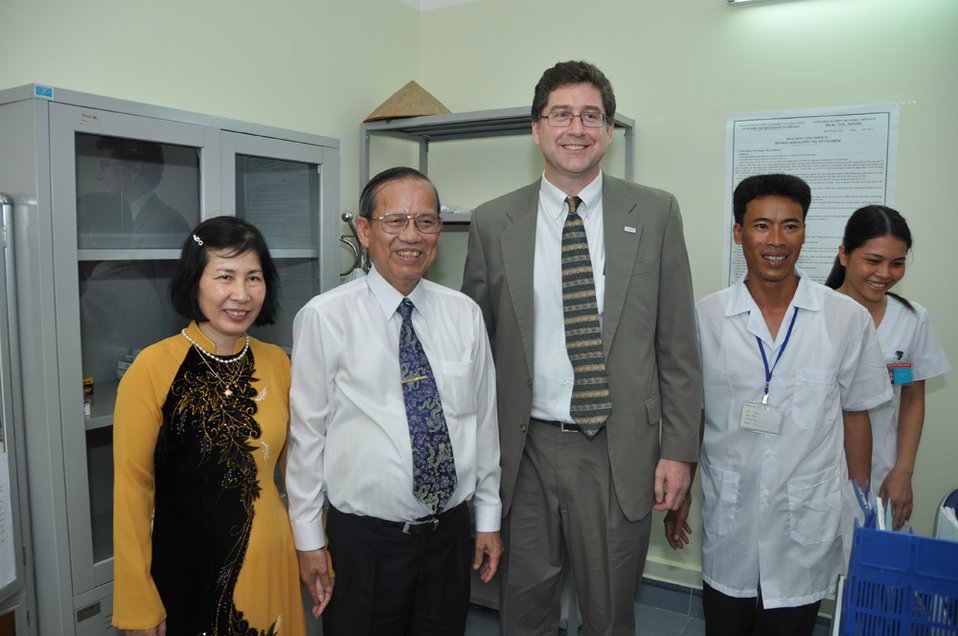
Co-pay Methadone Treatment Center Opens in Hai Phong on June 18, 2011

Deputy Prime Minister Truong Vinh Trong.